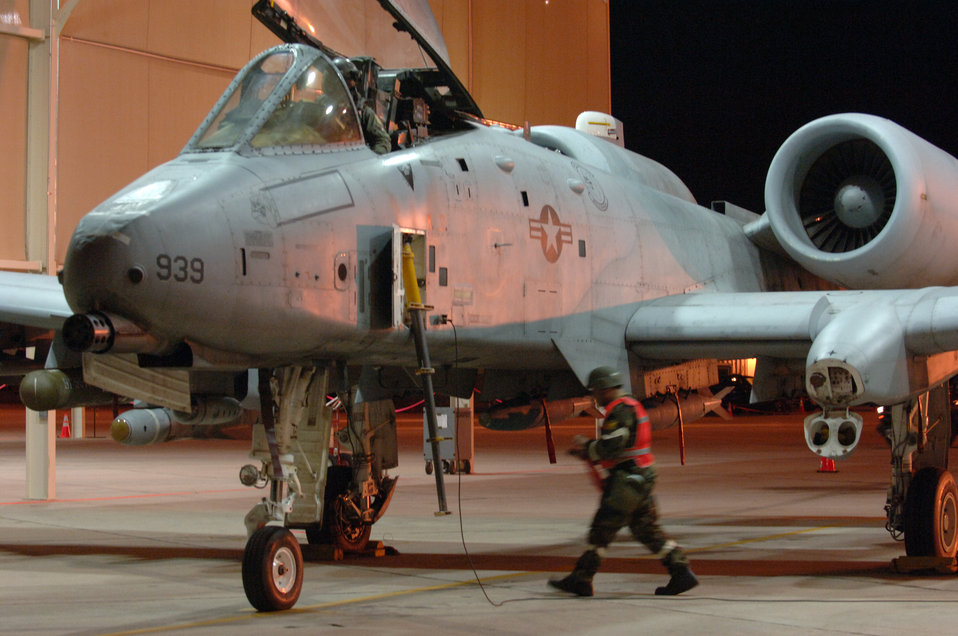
Exercise Bushwacker 06-02

Tech. Sgt. Roberto Munoz checks a mechanical problem on an A-10 Thunderbolt II on Monday, April 3, 2006, during pre-flight checks in a simulated deployment at Davis-Monthan Air Force Base, Ariz. Sergeant Munoz is with the 355th Aircraft Maintenance Squadron.